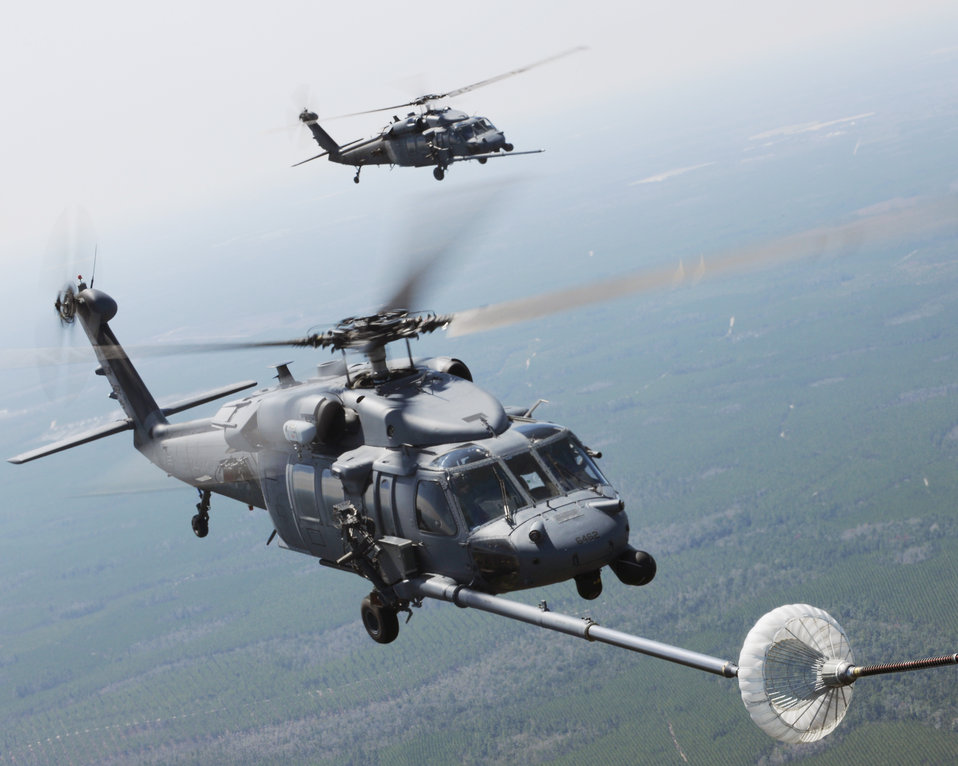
Need fuel?

The first of two HH-60G Pave Hawks from the 41st Rescue Squadron prepares to refuel March 16, 2010, near Moody Air Force Base, Ga. Both were refueled by a HC-130P/N Combat King from the 71st Rescue Squadron during a flight training mission.